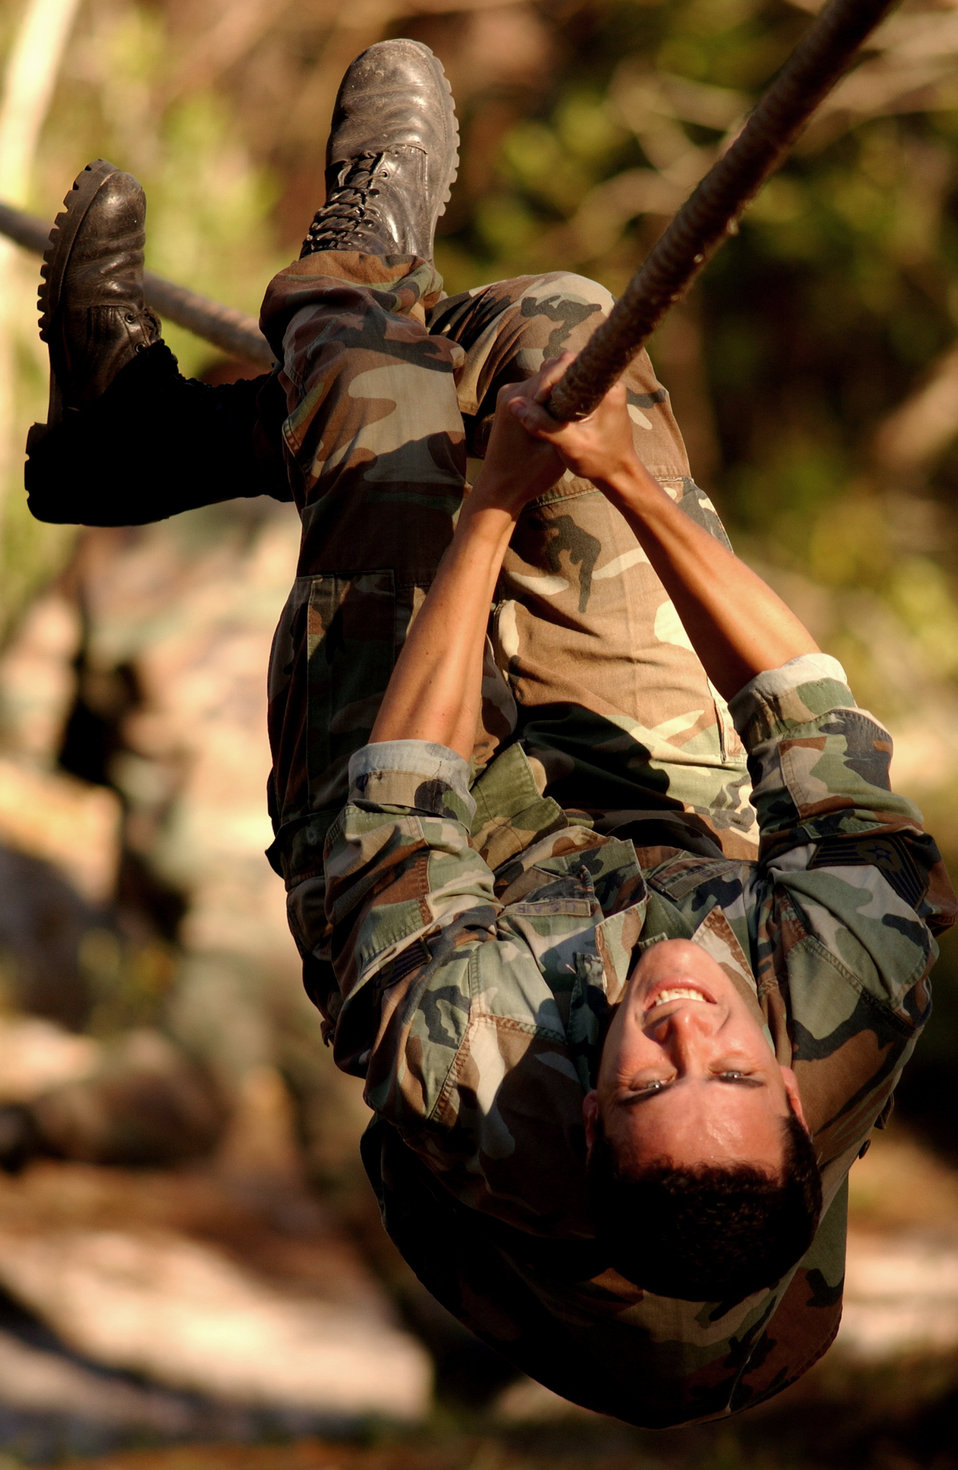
Hanging on

AVON PARK, Fla. -- Tech. Sgt. Charles Rushing pulls himself along a rope during the Dragon Challenge 04 obstacle course event here Dec. 5. Dragon Challenge is an annual competition which tests the physical, mental, and emotional strength, and endurance of tactical air control party Airmen. Sergeant Rushing is assigned to the 18th Weather Squadron at Pope Air Force Base, N.C.